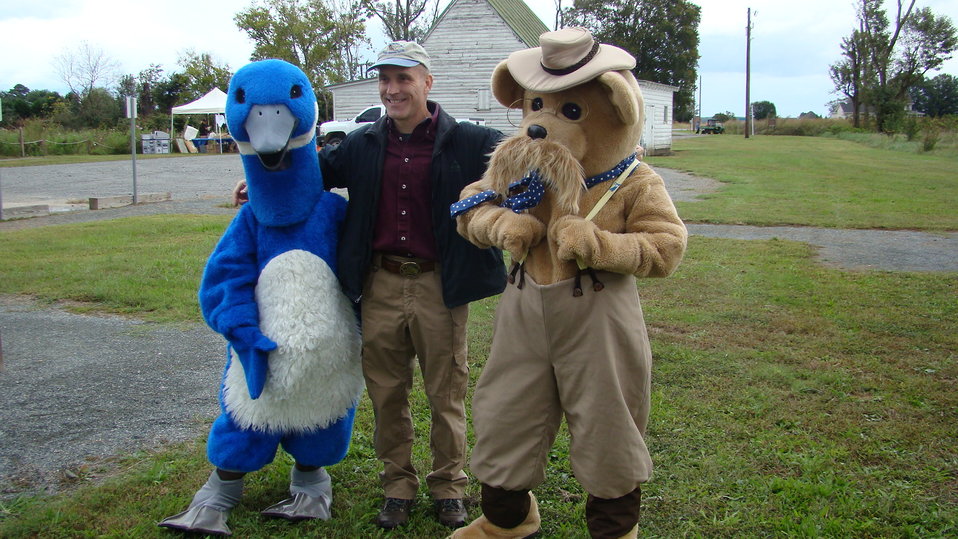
Rappahannock River Valley NWR 15th Anniversary

T.R. Bear and Puddles pose for pictures.